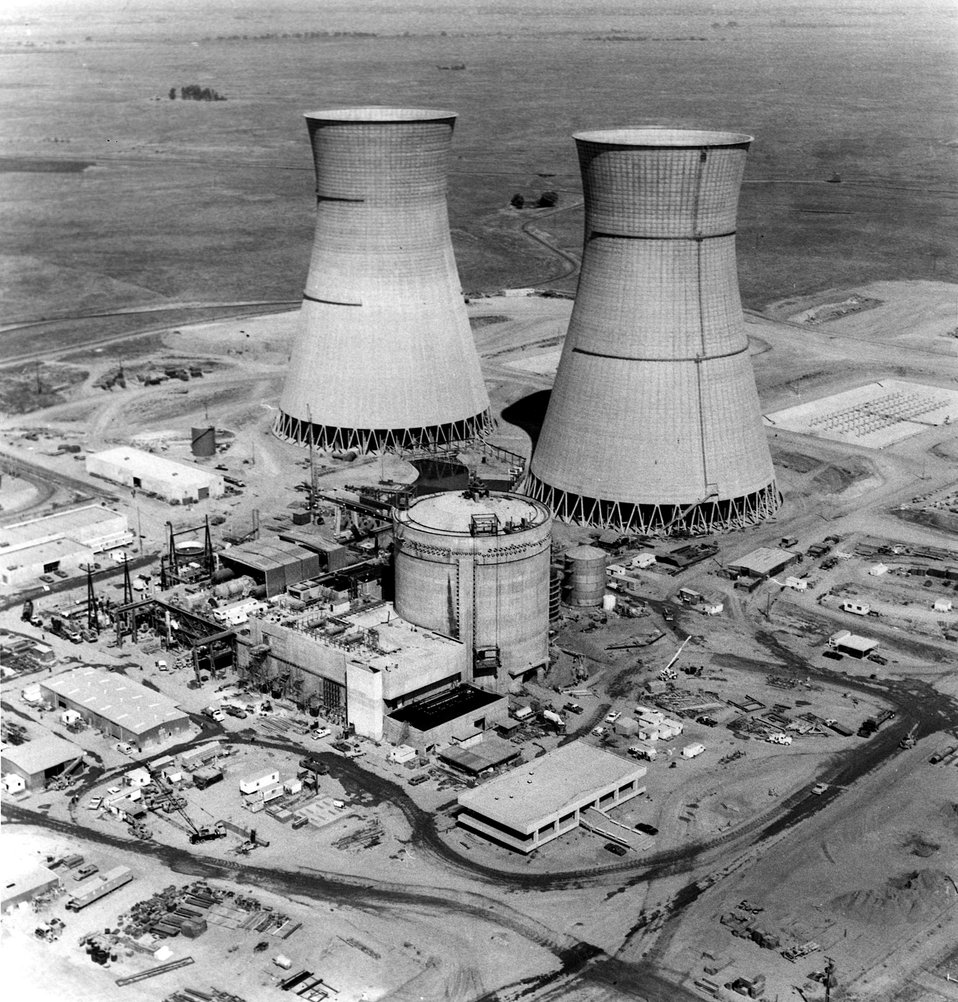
Rancho Seco Nuclear Generating Station Unit 1 near Clay Station, California. The Sacramento Municipal Utility District's generating station employs Babcock & Wikcox pressurized water reactor and will generate 913,000 Kw electric. Circa 1974.